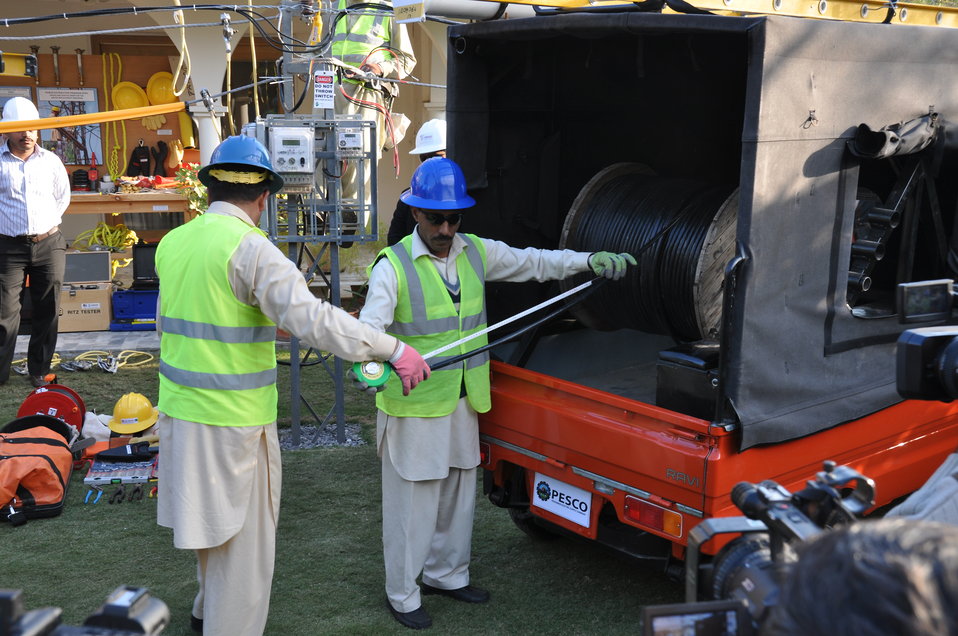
United States Government Strengthens PESCO Field Operations 03